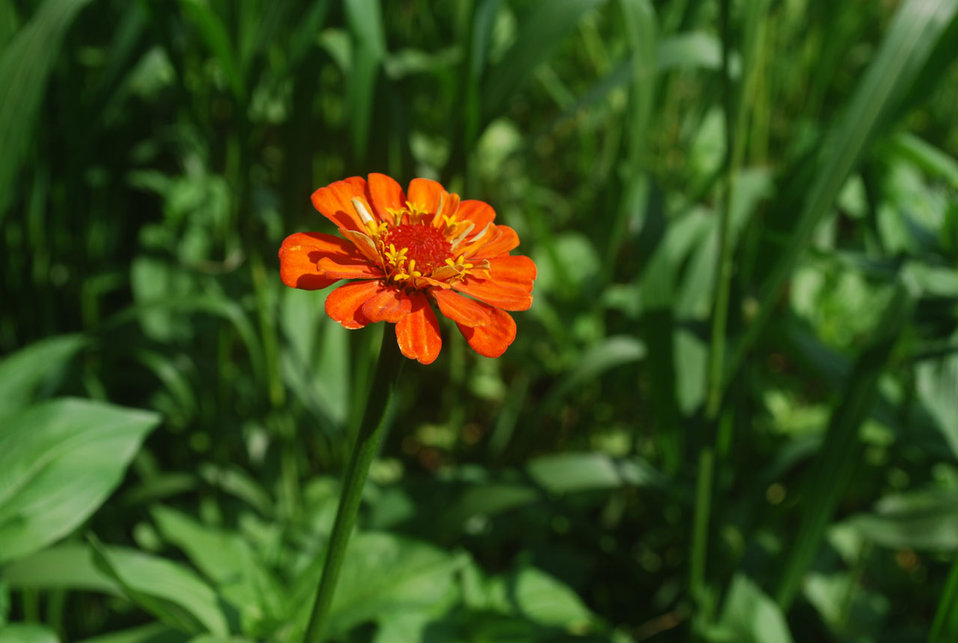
Orange flower close up.